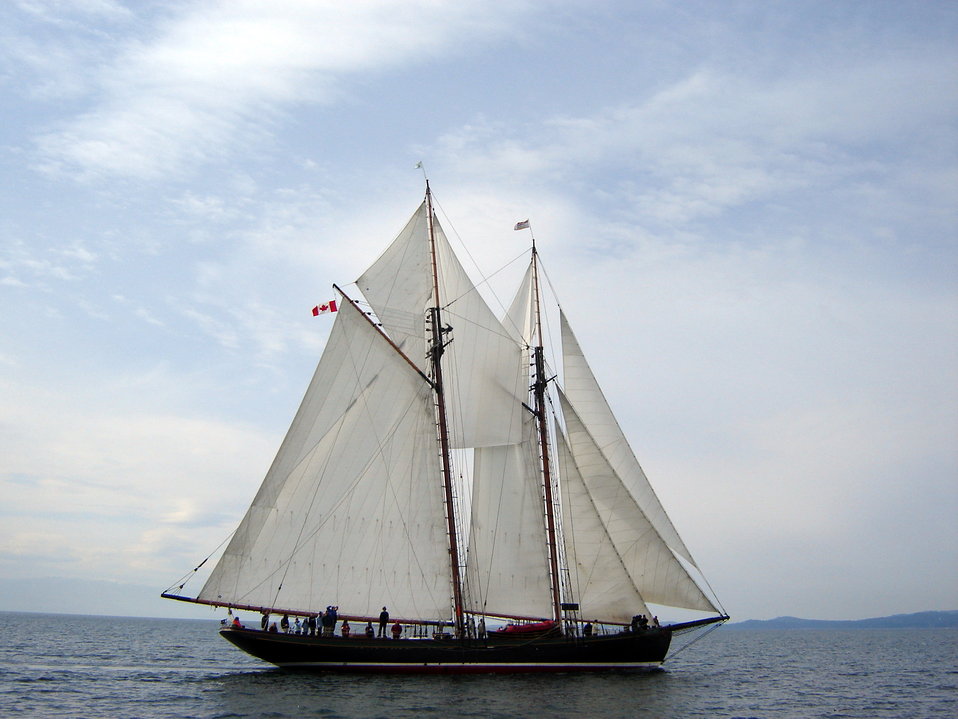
Photo taken by Graham Kingsley